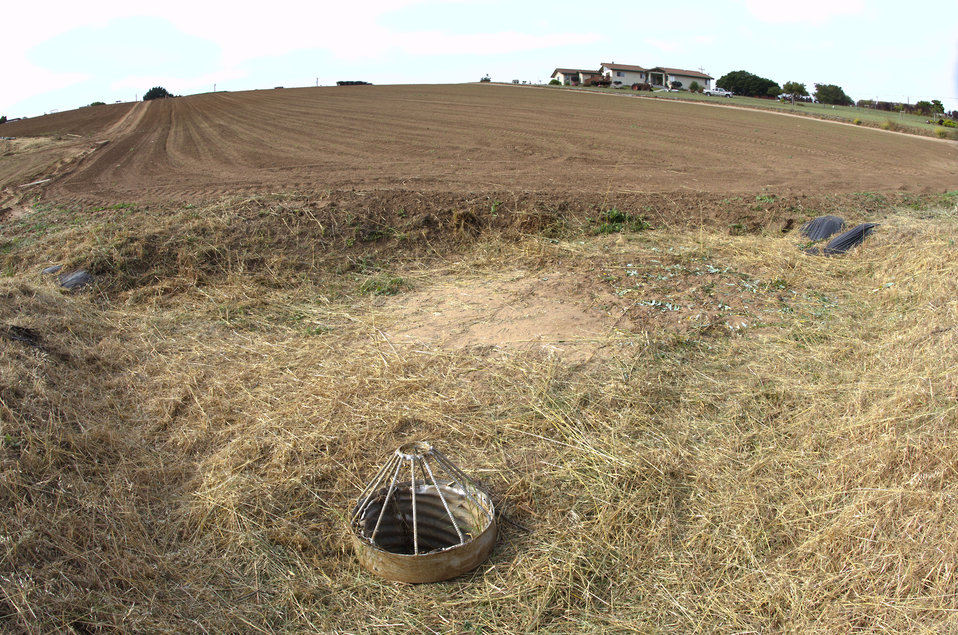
A sediment pond and drainpipe at the low end of a strawberry farm field near Castroville, CA, on Thursday, June 16, 2011. When seasonal rains produce runoff, the silt that flows with it is caught in sediment basins. The basins have fast growing plants to hold the structure and a raised drainpipe that allows the water to pool and silt to settle. The farm is within sight of the Monterey Bay National Marine Sanctuary, it is important that silt does not reach the ocean waters. The grass has been trimmed down to show the contour and design of the basin during this dry time of the year. The roots are alive and the plants will grow back.